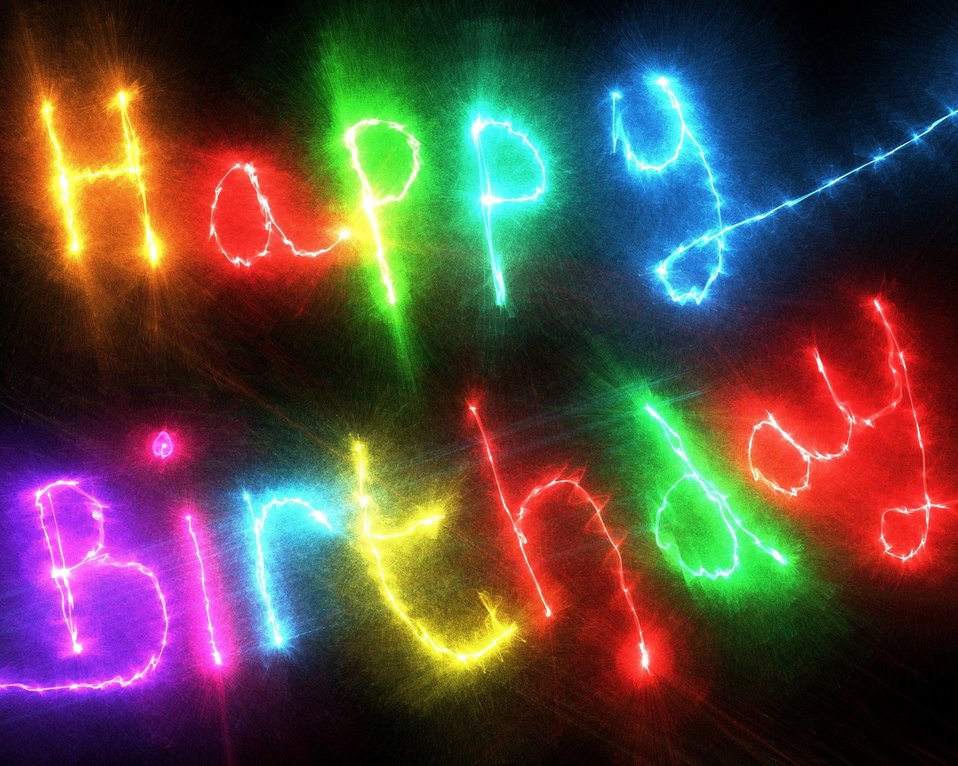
Happy birthday text

Digitally painted electric glow happy birthday text greeting..